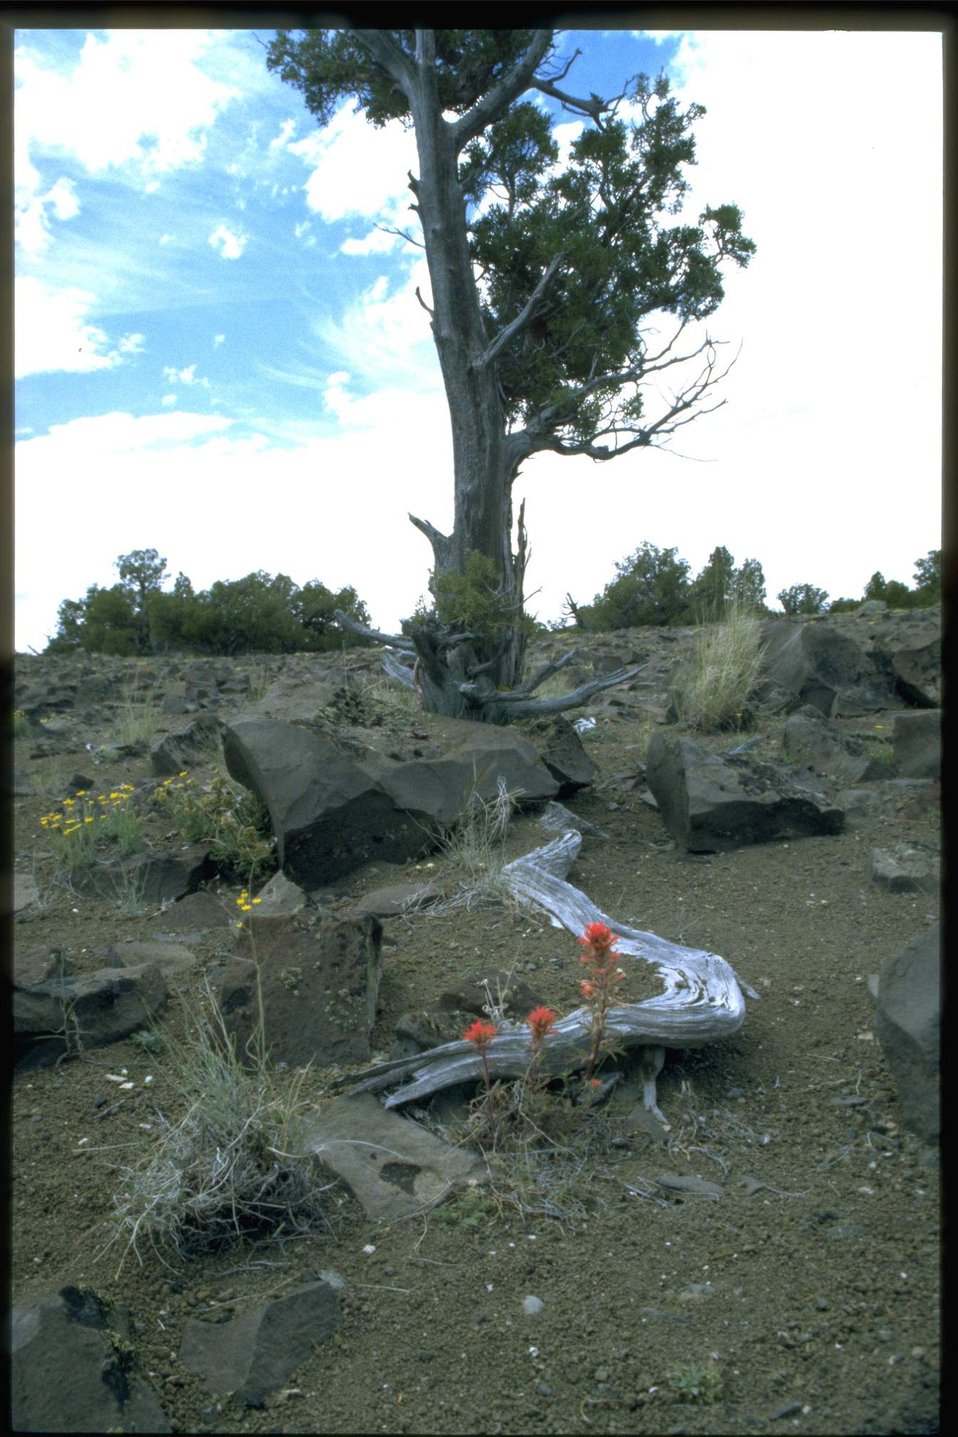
Far shot of Indian Paintbrush wildflower habitat.